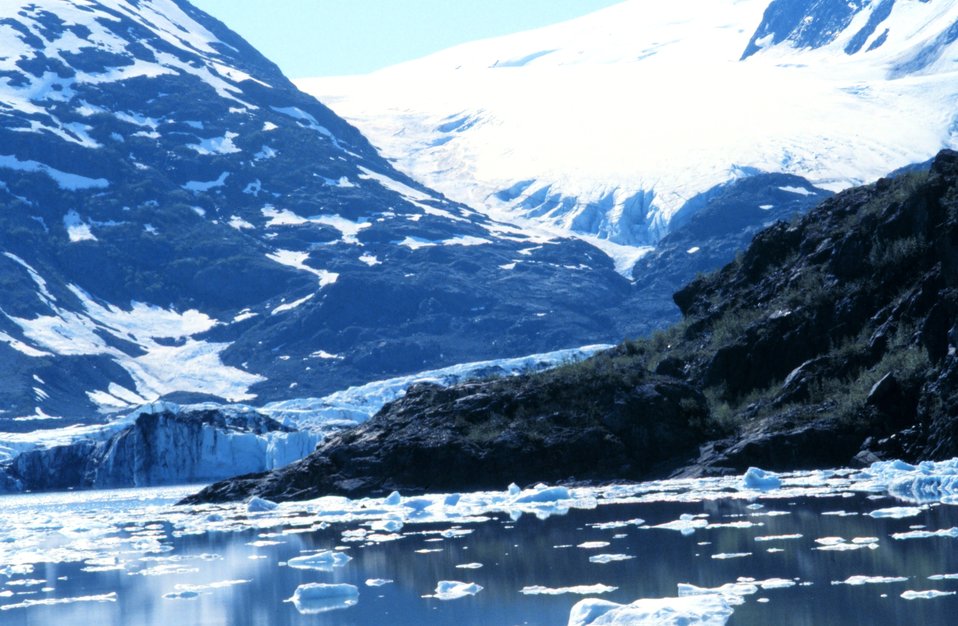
Glacier and small icebergs in Kenai Fjords